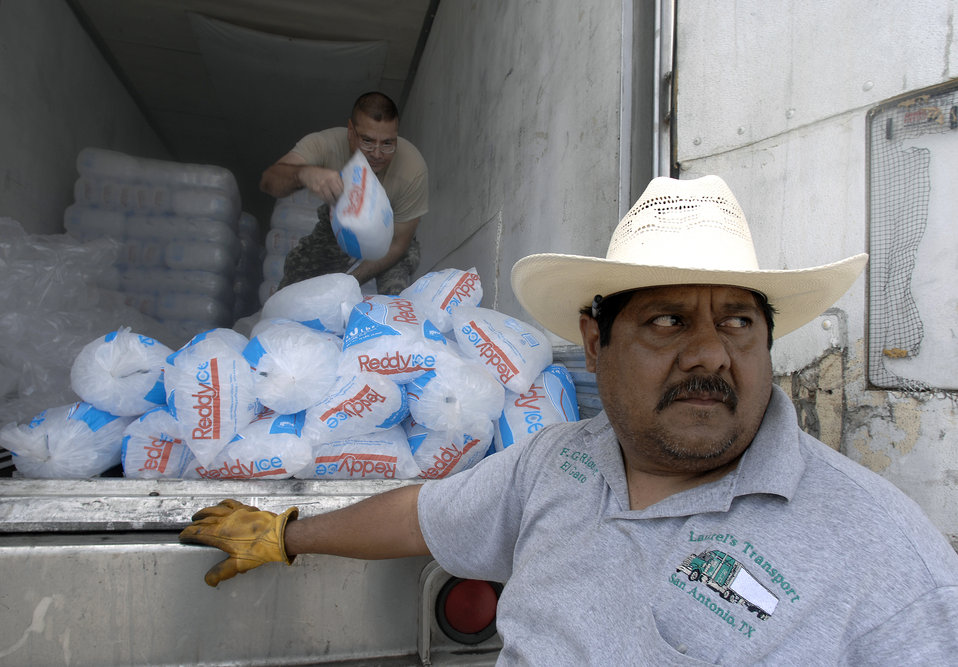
Hurricane Dolly

Truck driver Fernando Rios watches hurricane victims arriving from South Padre Island, Texas, looking for relief aid July 24 while U.S. Army Specialist Luis Dominguez prepares bags of ice to be loaded into vehicles. Texas Task Force 1 members passed out nearly 4,000 bags of ice, 50 tons of water and 1,200 self-heating meals to vicitims of Hurricane Dolly. Specialist Dominguez is stationed with the 133rd Aviation Battalion at New Braunfels, Texas.